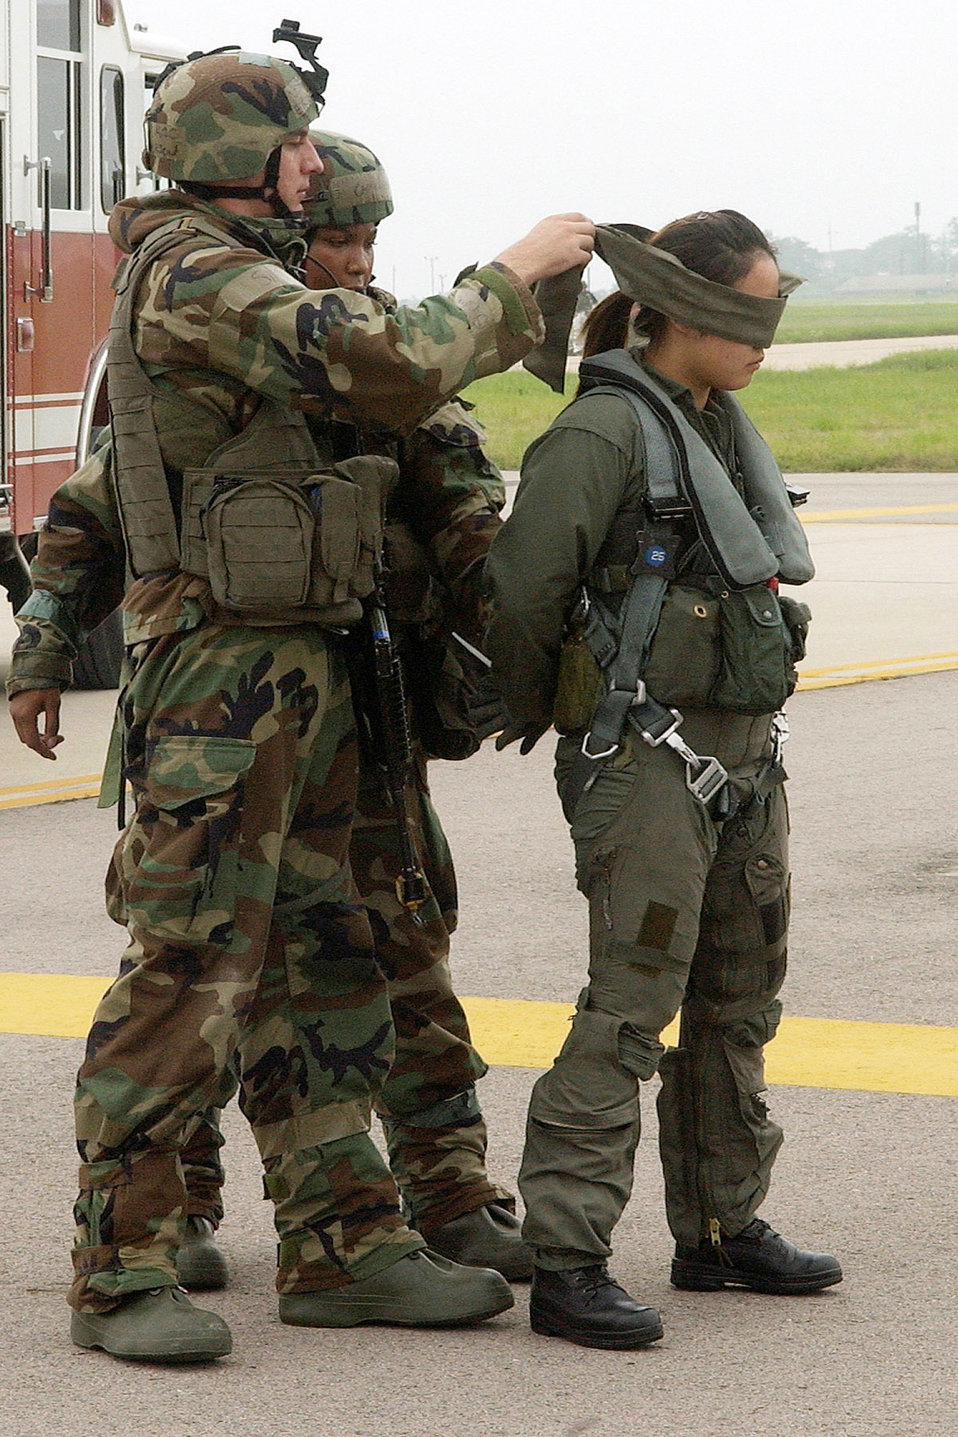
Maintaining credible deterrence

Airmen 1st Class Erik Halvorson and Caprell Edwards blindfold an unidentified individual on the flightline July 26 at Kunsan Air Base, South Korea. The scenario is part of the week-long 7th Air Force Peninsula-Wide Combat Employment Readiness Exercise taking place July 23 through 27. The exercise tests the ability of Air Force fighter wings to properly defend South Korea through the use of airpower. Airmen Halvorson and Edwards are assigned to the 8th Security Forces Squadron.